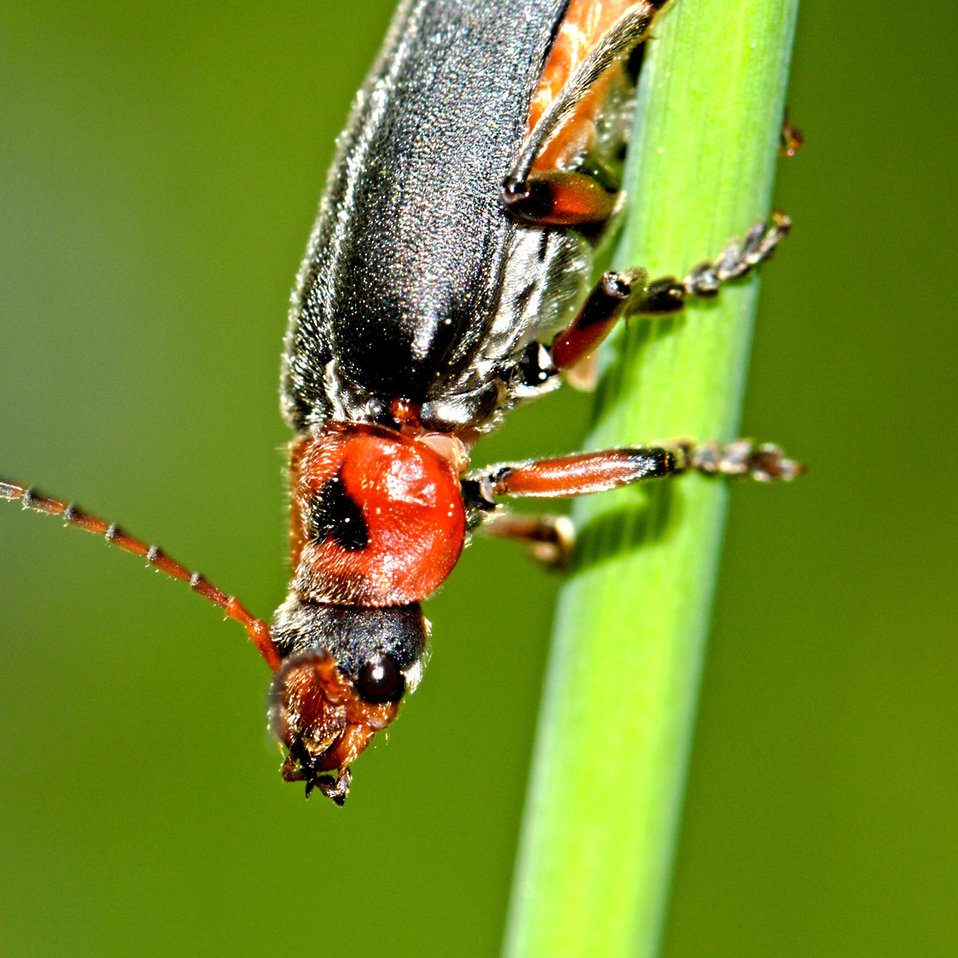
Alien 2

Some macro photo of animal.